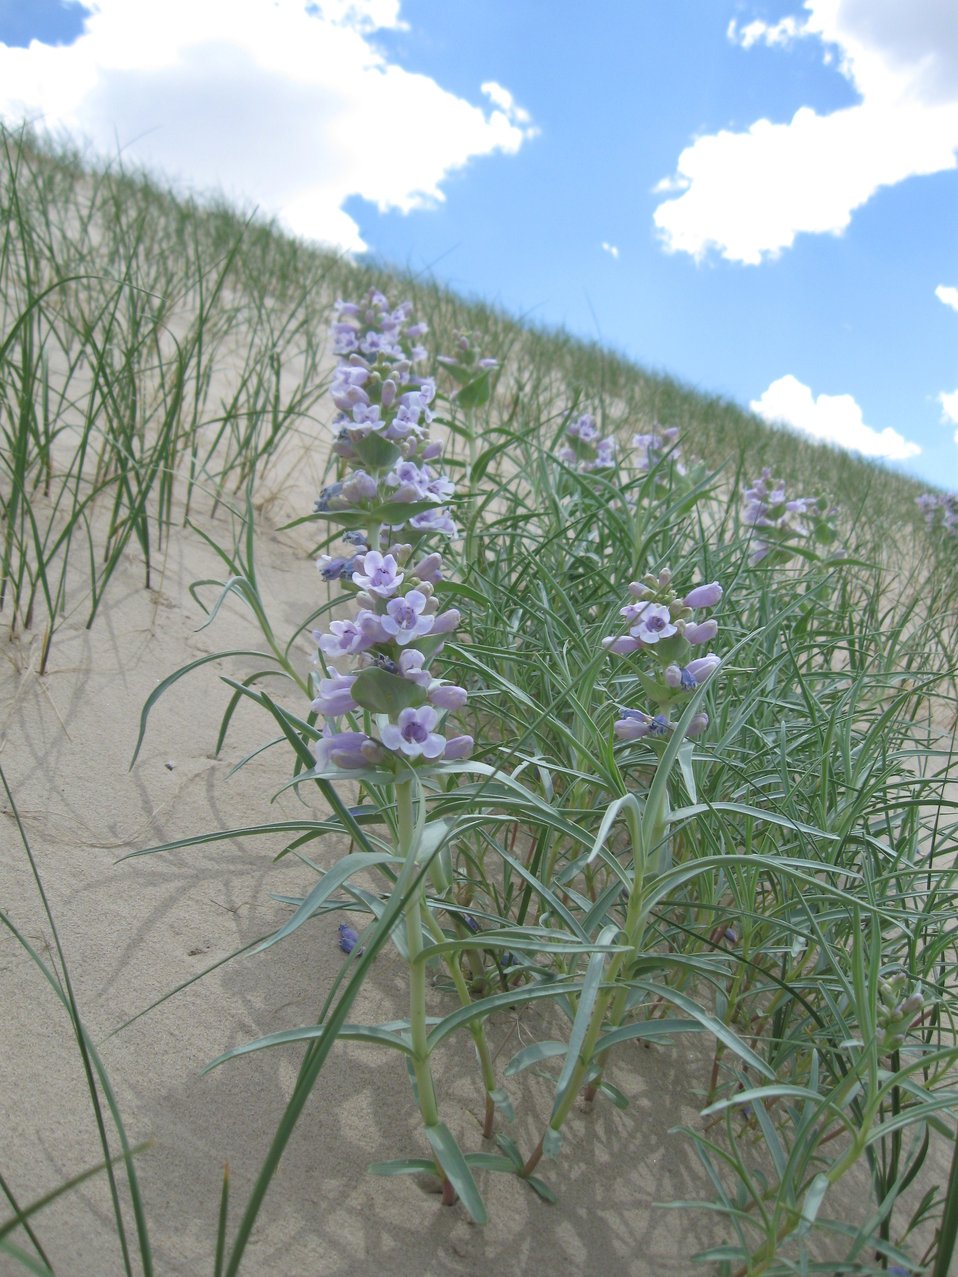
Blowout Penstemon in the Dunes

Blowout Penstemon (Penstemon haydenil) is a perennial herb listed as endangered on October 1, 1987. The plant's current known range in Wyoming is the Ferris dunes area in Carbon County.